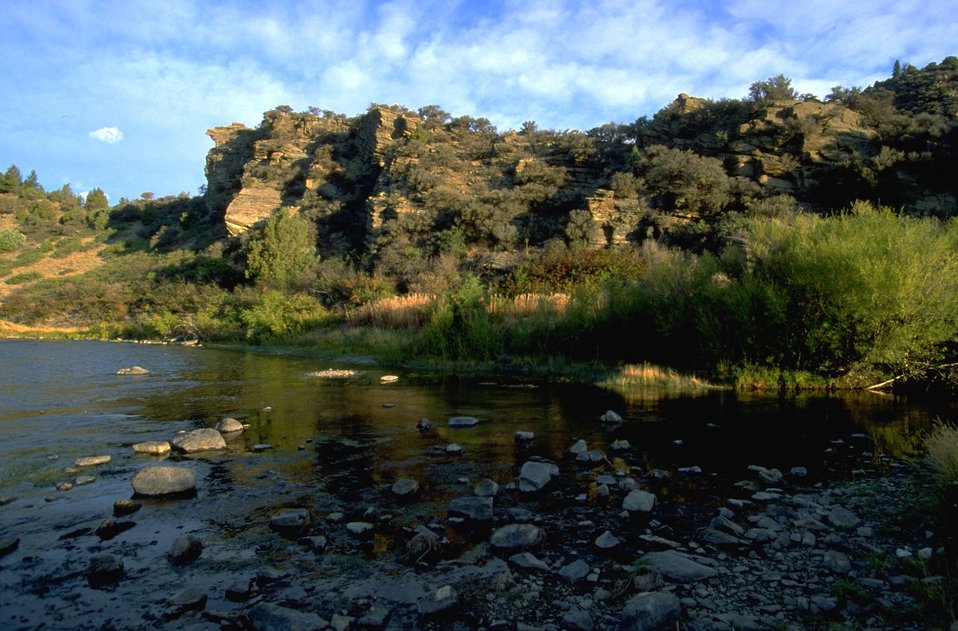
Rock Bluffs and Trees on a bank of the Madison